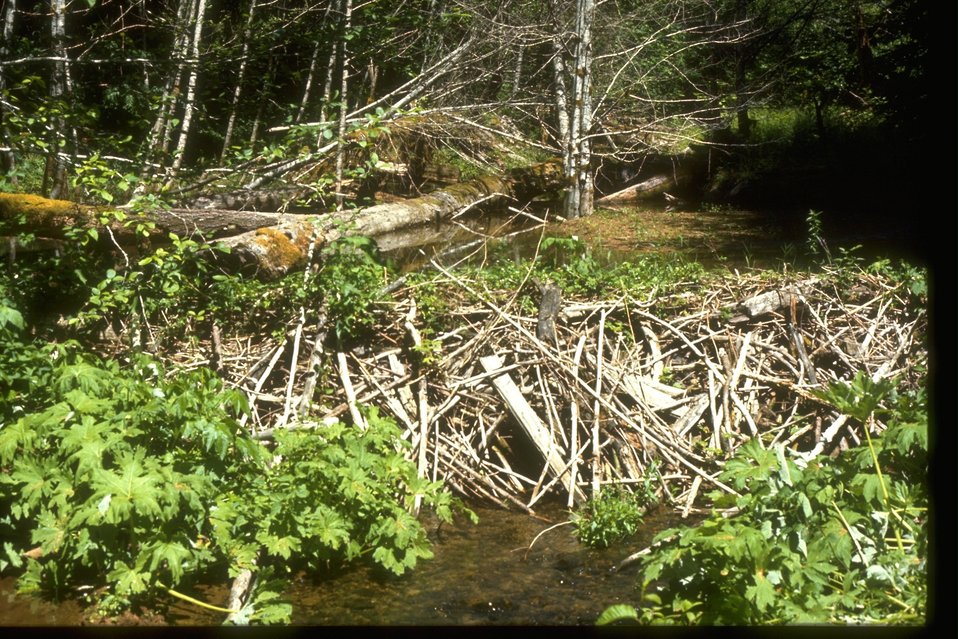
Beaver dam.